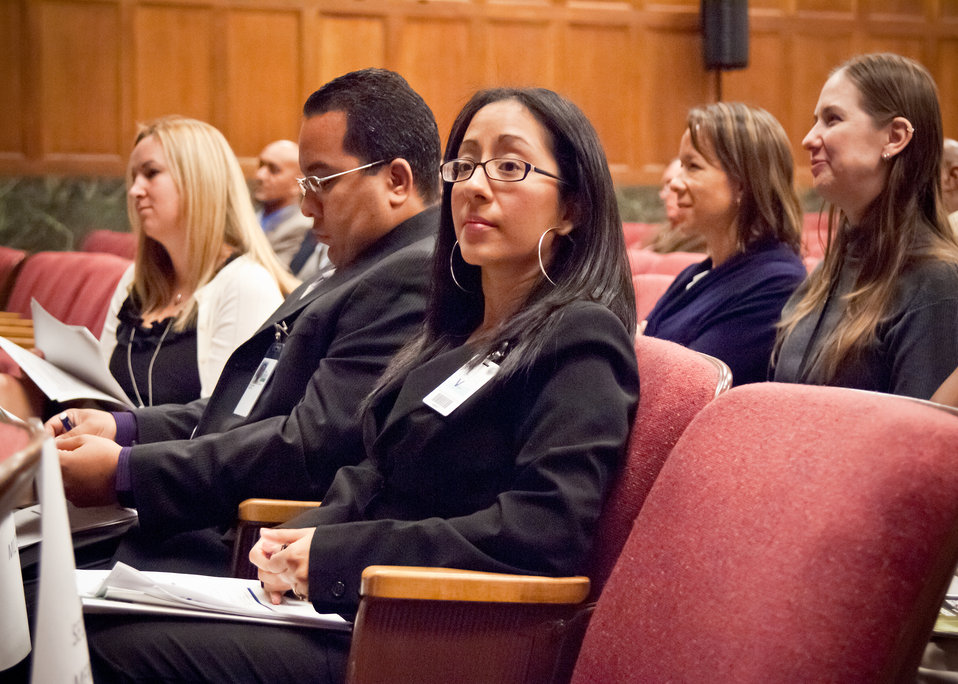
From left: Lauren Kotwicki, an intern with the Office of Human Resources Management, Goldie Feliciano, an intern with the Office of Ethics, Science Division and Vanessa Correa all Schedule “A” applicants listen to panel members during the U. S. Department of Agriculture National Disability Employment Awareness Month event in Washington, DC, on Wednesday, October 5, 2011. Agriculture Secretary Tom Vilsack is dedicated to establishing the USDA as the lead Federal agency in employing individuals with disabilities. The theme for the event is “Profit by Investing in Workers with Disabilities.” USDA is committed to ensuring that all our programs are accessible and inclusive of individuals with disabilities.